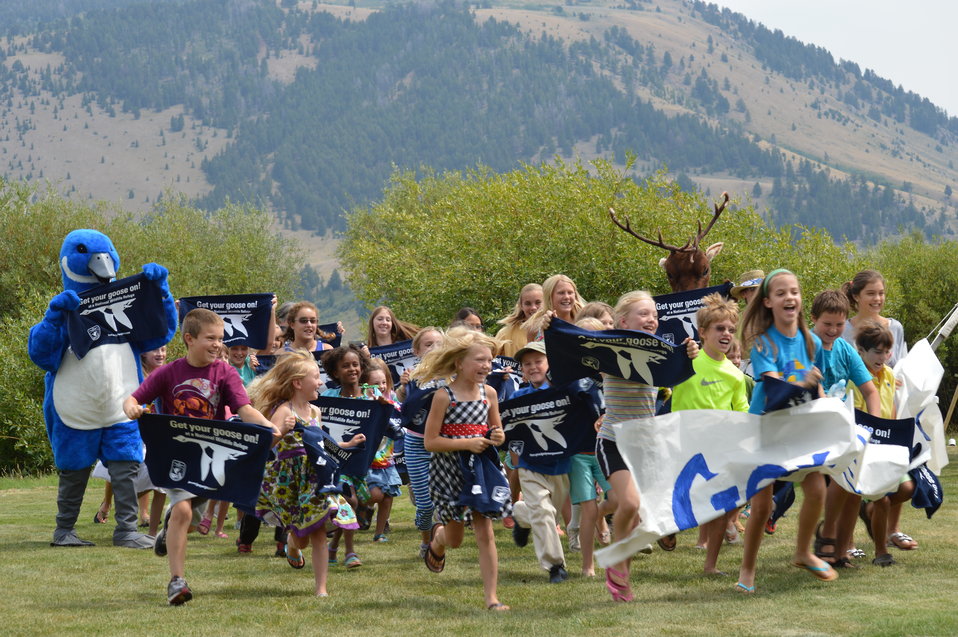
Get Your Goose On! - National Elk Refuge Style

On August 10, 2012 the U.S. Fish and Wildlife Service and Partners celebrated the 100 year anniversary of the establishment of the National Elk Refuge. In these photos, young attendees, along with Puddles the Blue Goose and the National Elk Refuge's mascot, showed us how to Get Your Goose On! with style.